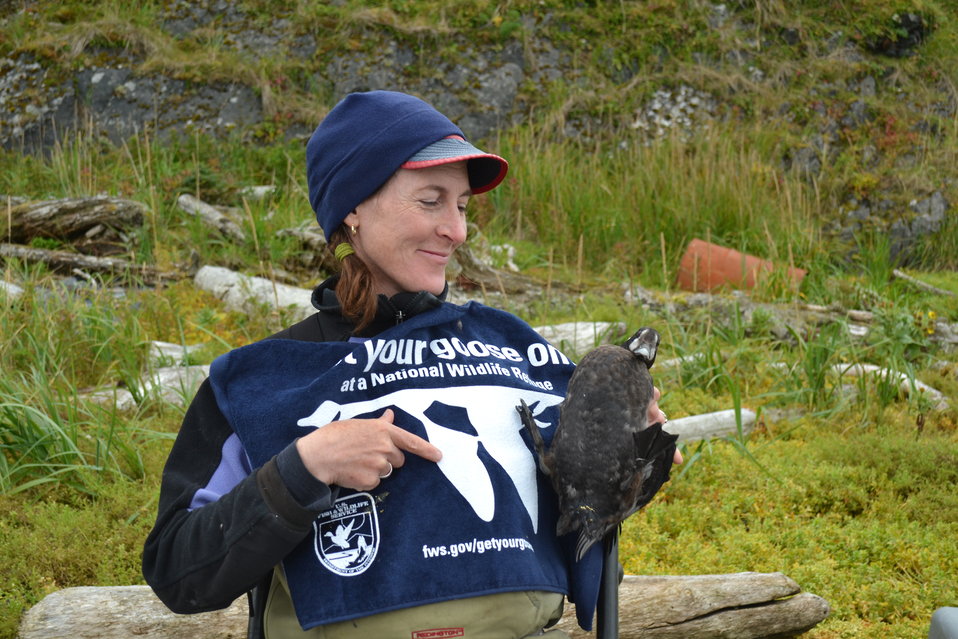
Get Your Goose On! - Alaska Style

Kodiak Refuge Bird Biologist Robin Corcoran with a Harlequin Duck

Credit: Katharine Studholme / USFWS

The Kodiak National Wildlife Refuge is a United States National Wildlife Refuge in the Kodiak Archipelago in southwestern Alaska, United States.

The Kodiak National Wildlife Refuge includes the southwestern two-thirds of Kodiak Island, Uganik Island, the Red Peaks area of Afognak Island and all of Ban Island in the archipelago. It encompasses 1,990,418 acres (8,054.94 km2).[2] The refuge is administered from offices in Kodiak.

The refuge contains seven major rivers and about 100 streams. It is a spawning ground for all six species of Pacific Ocean salmon, trout and several other fish species, as well as a nesting ground for 250 species of bird, many of which feed on salmon. The refuge has only six native species of mammals: Kodiak brown bear, red fox, river otter, ermine, little brown bat and tundra vole. The non-native mammals Sitka deer, mountain goat, Roosevelt elk, snowshoe hare and beaver were introduced to the archipelago between the 1920s and 1950s and are now hunted and trapped.

The climate of the refuge is that of southern Alaska, mild and rainy. Many areas in the refuge are densely forested with Sitka Spruce at lower elevations. There are grasslands in drier areas and at higher elevations. The refuge contains several small glaciers.